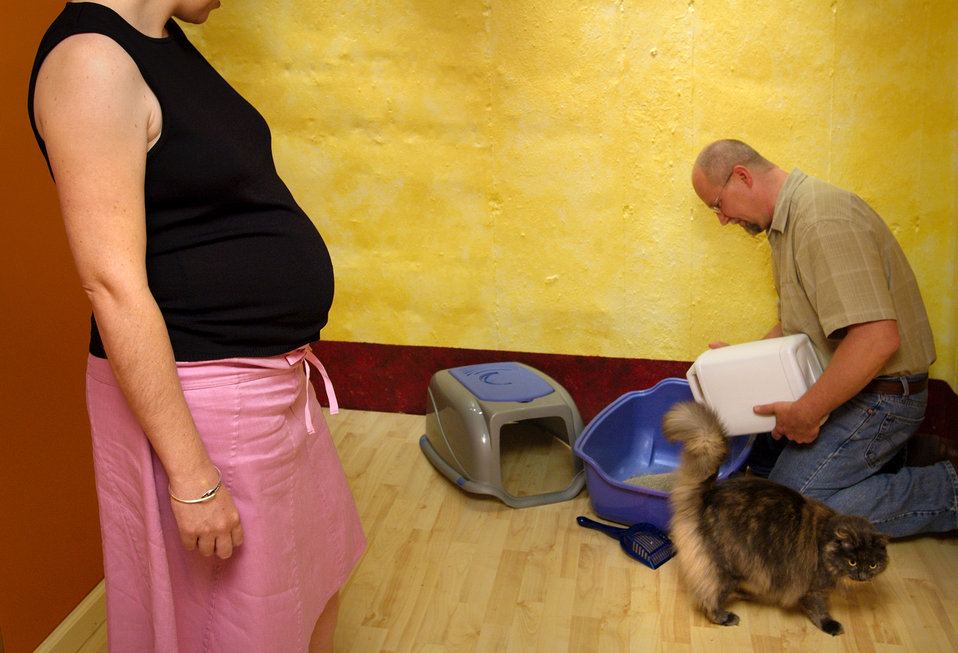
In this 2005 photograph, a pregnant woman was looking on while her husband was in the process of changing the kitty litter, in order to avoid contact with possible pathogens such as Toxoplasma gondii, the etiologic agent responsible for the disease, 'Toxoplasmosis'. This parasite is found throughout the world, possibly infecting more than 60 million people in the United States. Of those who are infected, very few have symptoms because a healthy person's immune system usually keeps the parasite from causing illness. However, pregnant women and individuals who have compromised immune systems should be cautious; for them, a Toxoplasma infection could cause serious health problems.